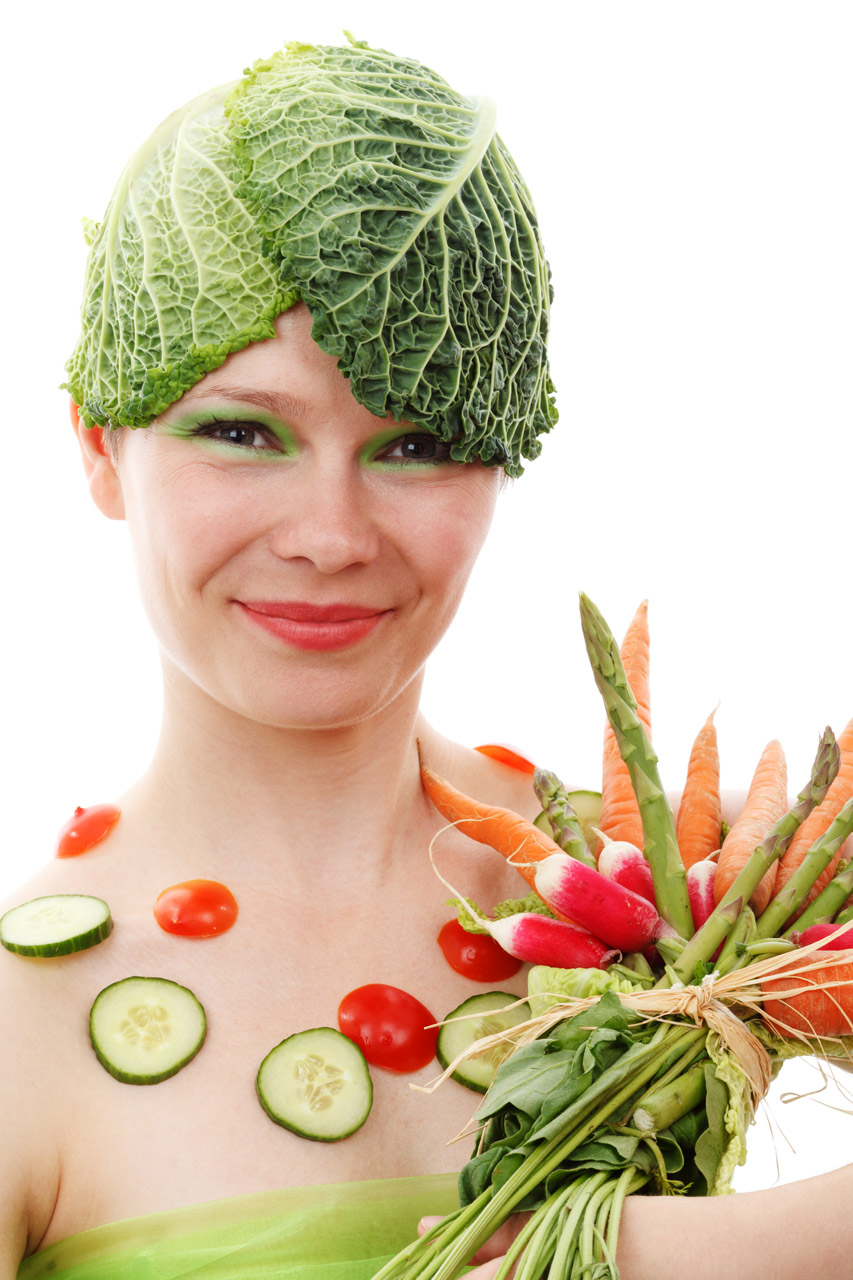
Vegetable woman

Young woman (jana svojsova) wearing colorful vegetable isolated on white background.